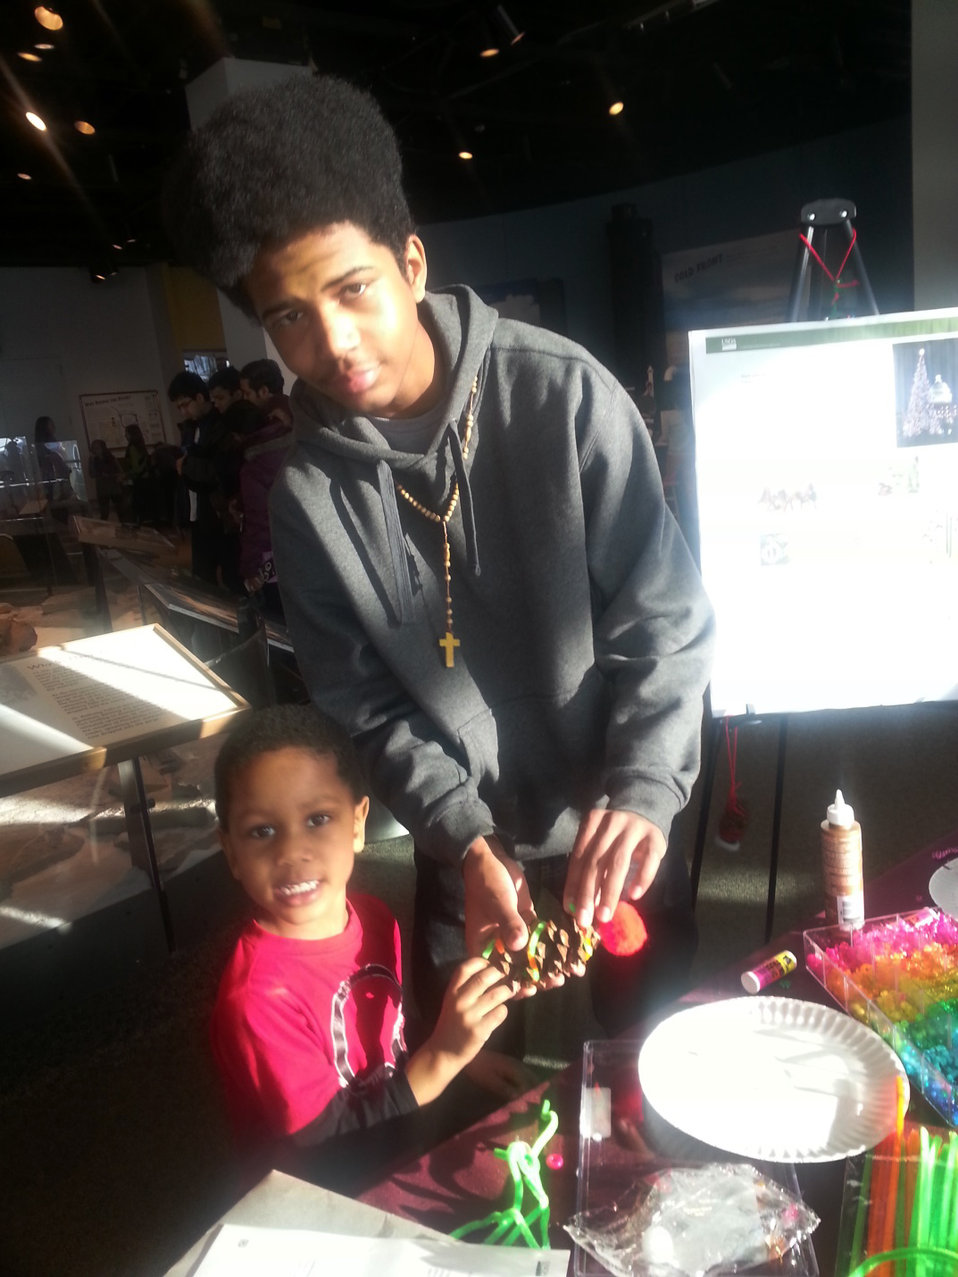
science fusion1

Youth attending the Science Museum of Minnesota’s Science Fusion Saturday event use their creativity to make ornaments for the 2014 Capitol Christmas tree.